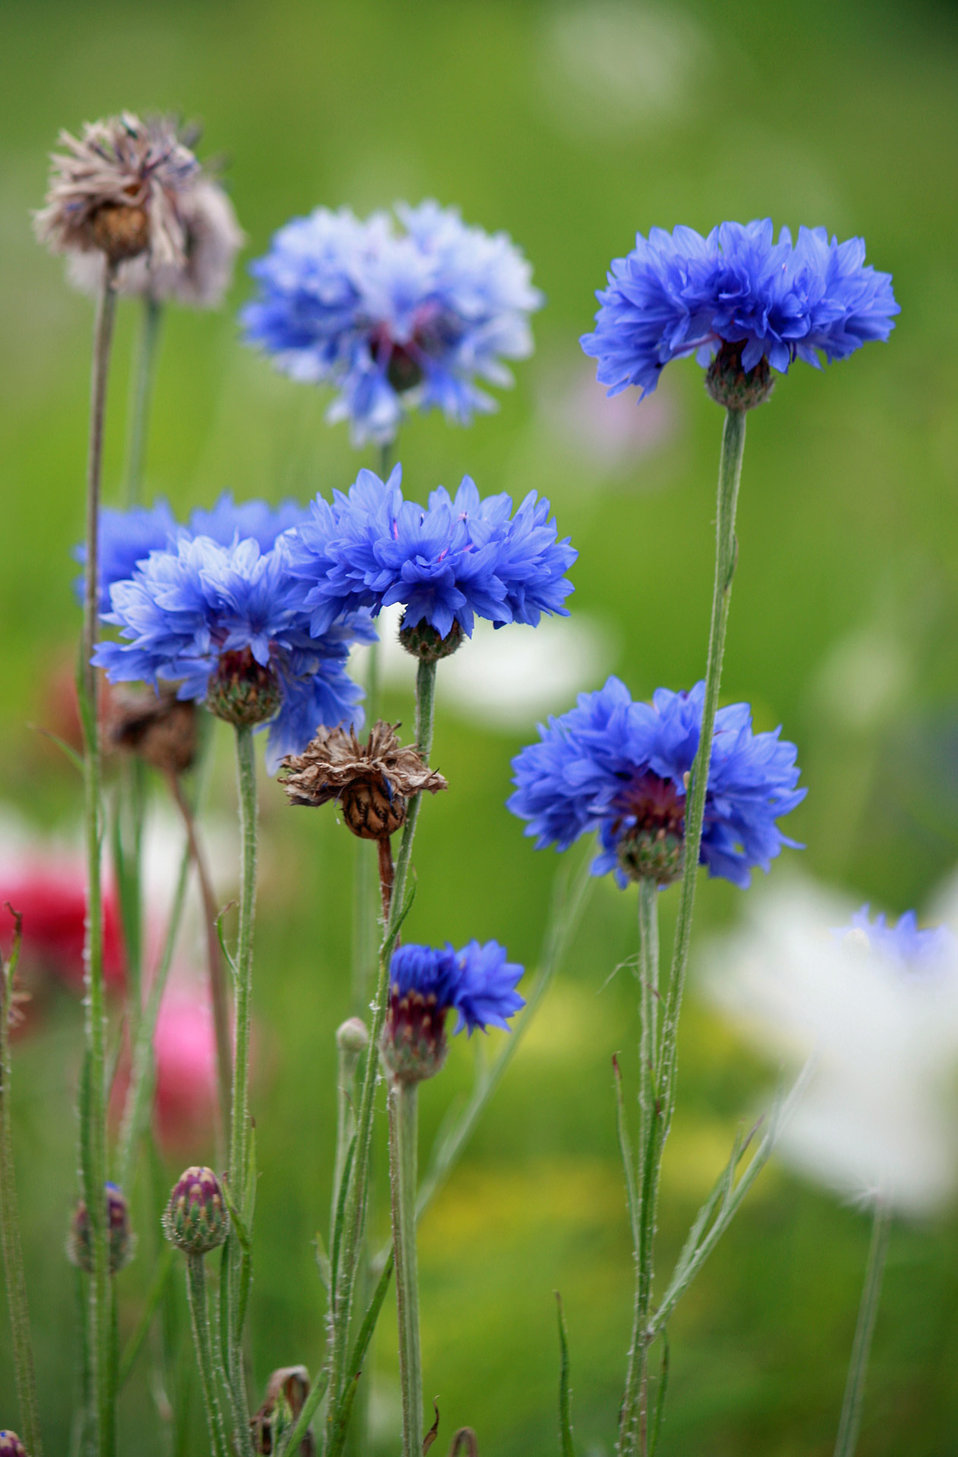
Cornflowers

Beautiful blue wild cornflowers in the meadow.